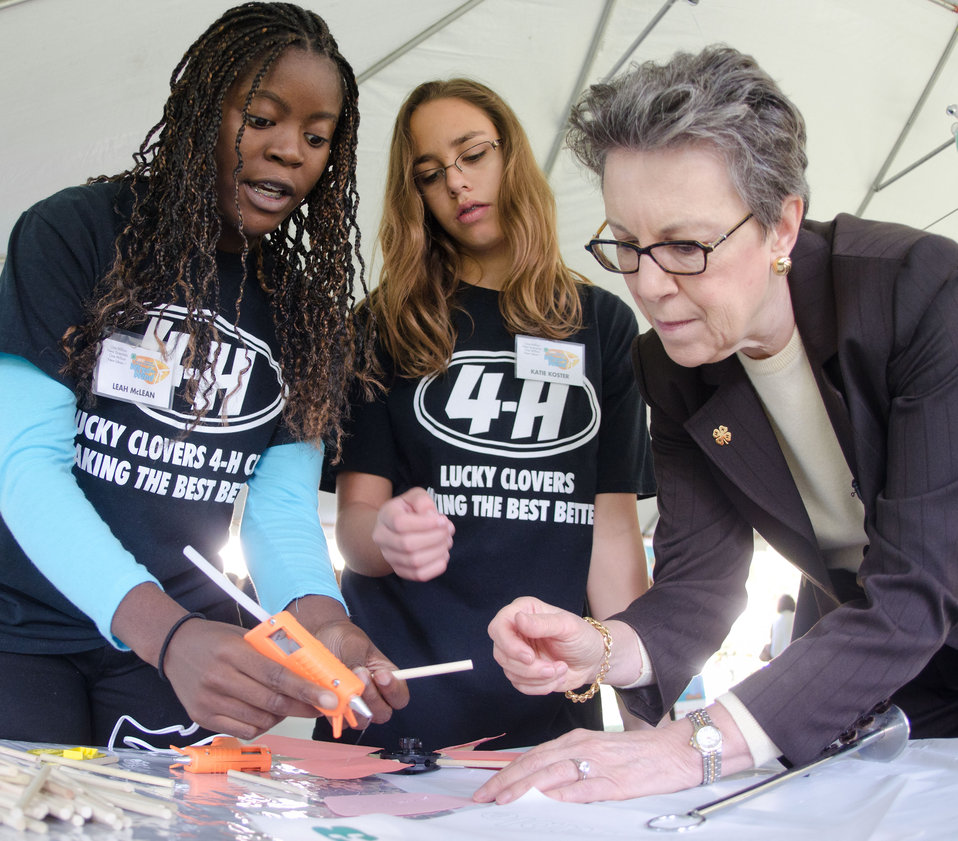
Leah McLean (l.) and Katie Koster (c.) “Lucky Clover” mentors, show U.S. Department of Agriculture Research, Education and Economics Under Secretary Dr. Catherine Woteki (r.), how “Lucky Clovers” such as them, will teach wind generator blade construction and blade disk assembly to 150 children from Virginia and Maryland, participating in the 4-H Youth Science Day event “Wired for Wind” at the National 4-H Conference Center in Chevy Chase, MD, on Wednesday, October 5, 2011.